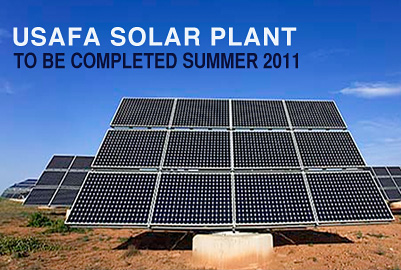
AFA solar array

Officials from with U.S. Air Force Academy and Colorado Springs Utilities broke ground on a solar array Nov. 1, 2010, at the Academy in Colorado Springs, Colo. Once complete, the Academy's $18 million array will provide approximately 6 megawatts of power to the base's electrical grid.